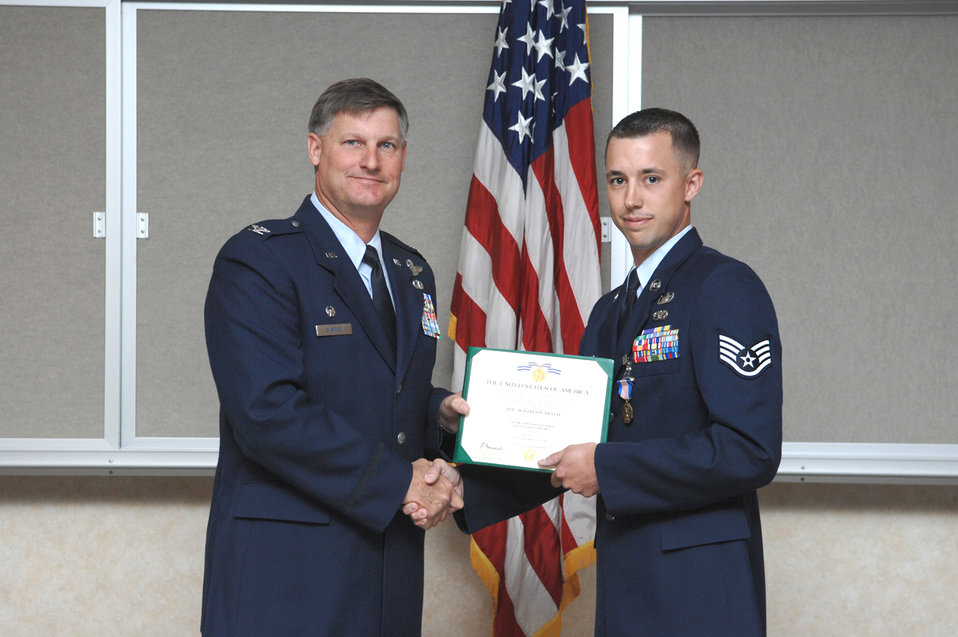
Airman saves four lives, earns Soldier's Medal

Col. Michael Bartley awards Staff Sgt. Scott White with the U.S Army Soldier's Medal May 10 at Nellis Air Force Base, Nev. Sergeant White is an explosive ordnance disposal technician assigned to the 99th Civil Engineer Squadron's EOD Flight. Colonel Bartley is the 99th Air Base Wing commander.